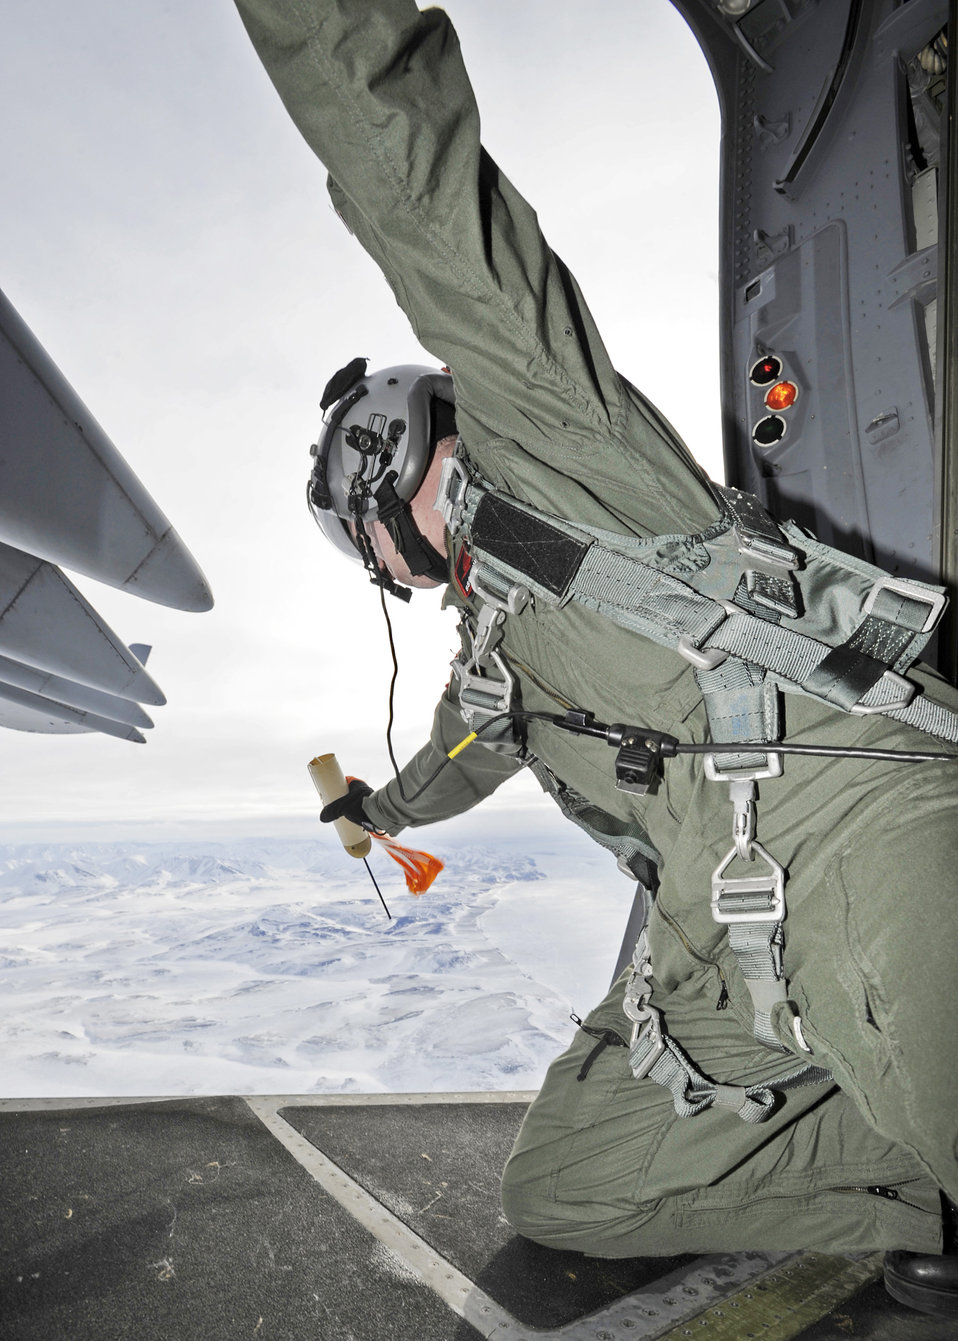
Elmendorf Airmen complete airdrop using 3-D weather technology

Staff Sgt. Chris McKnight prepares to deploy a sonde transmitter March 19, 2010, at Elmendorf Air Force Base, Alaska. Sergeant McKnight and his crew from the 517th Airlift Squadron participated in a combat simulation improved container delivery drop over Tin City, Alaska.